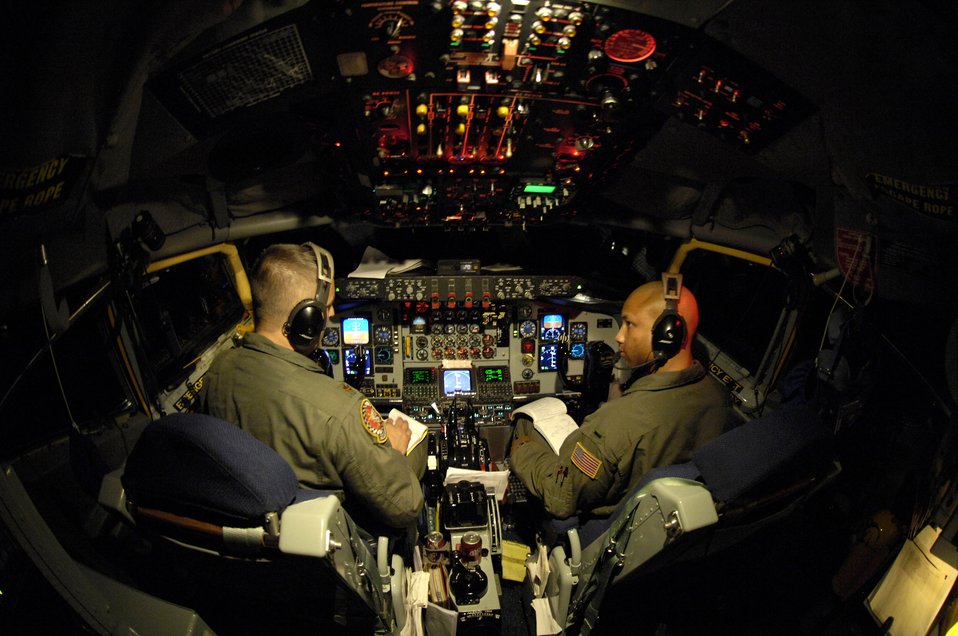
Fuel for the Pacific

Pilots go over their checklist before coming in on approach Dec. 15 to Hickam Air Force Base, Hawaii. The KC-135 Stratotanker pilots are from the 74th Air Refueling Squadron based at Grissom Air Force Reserve Base, Ind.